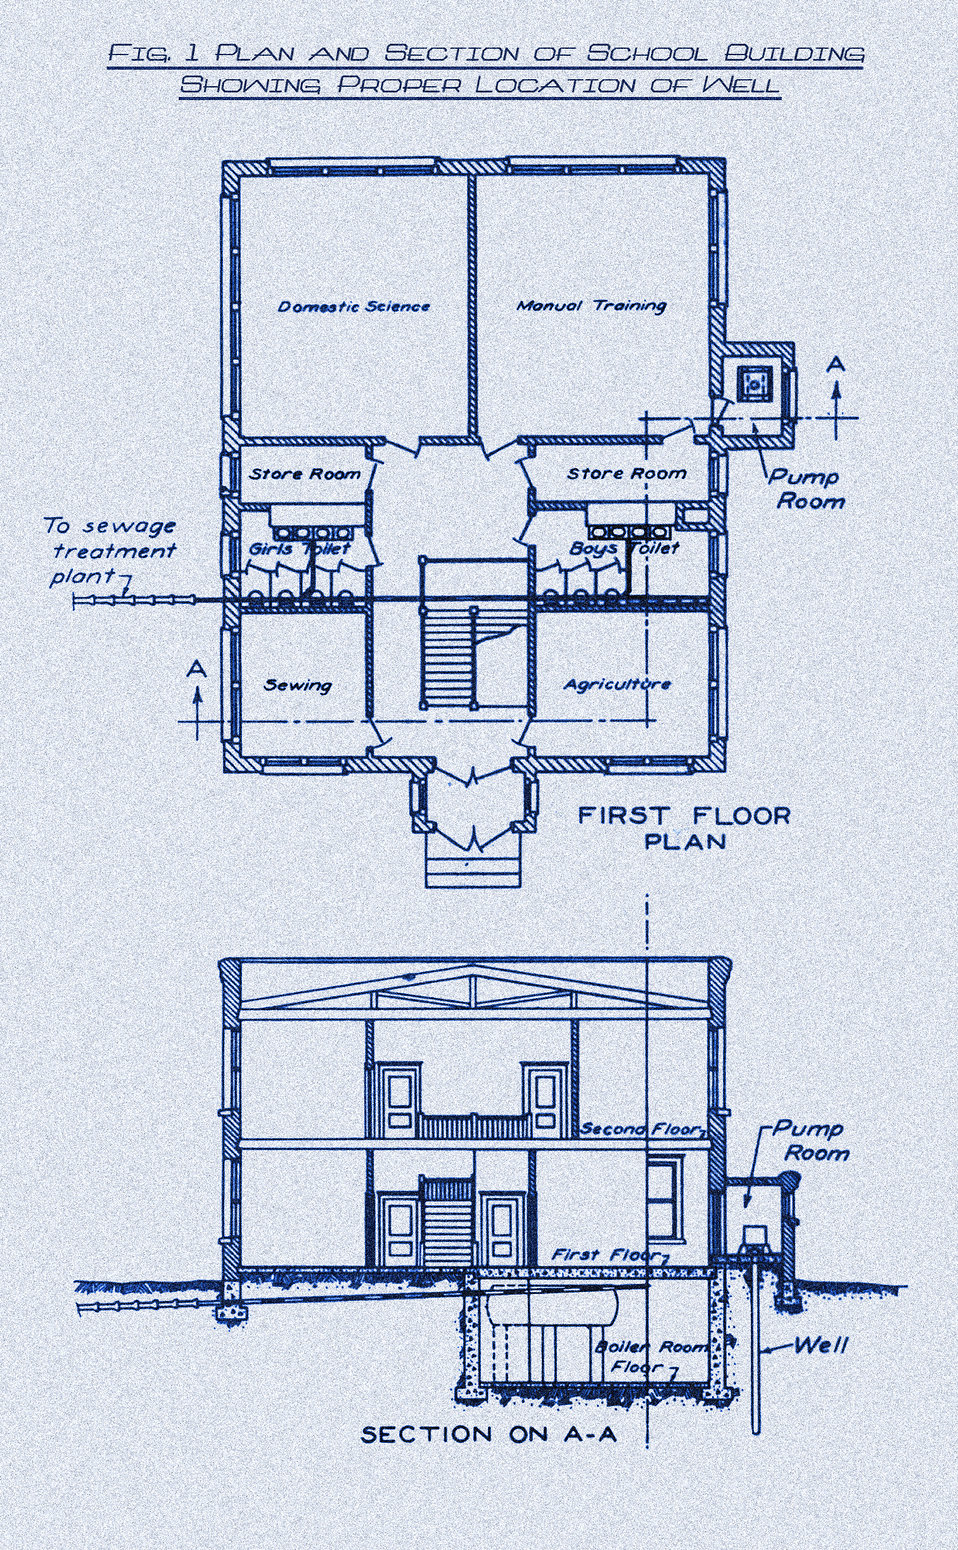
This historic diagram, which had been digitally enhanced and colorized, depicted the floor plan of a section of a typical Minnesota school building. Its purpose was to indicate the proper location of a well, which was to serve the potable water needs of its occupants.